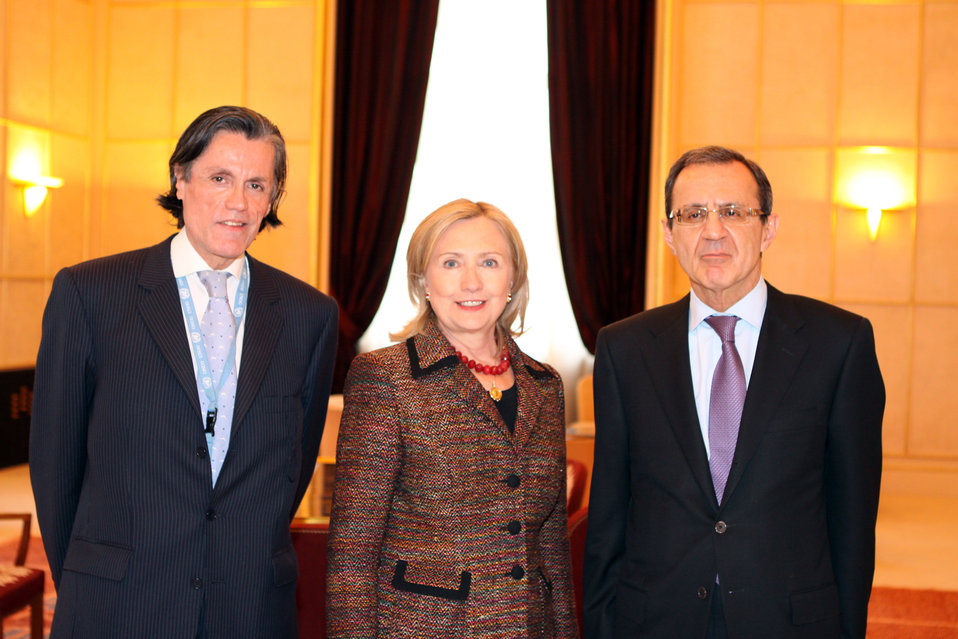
Secretary Clinton Poses for a Photo With UNOG Director-General Ordzhonikidze and Chile Permanent Representative Yuraszeck

U.S. Secretary of State Hillary Rodham Clinton poses for a photo with Sergei Ordzhonikidze, Director-General of UNOG and Secretary-General of the Conference on Disarmament, right, and Pedro Oyarce Yuraszeck, Permanent Representative of Chile to the United Nations Office at Geneva and current President of the Conference on Disarmament, left. The photo was taken just before the Secretary’s February 28, 2011, address to the Conference on Disarmament in Geneva, Switzerland.